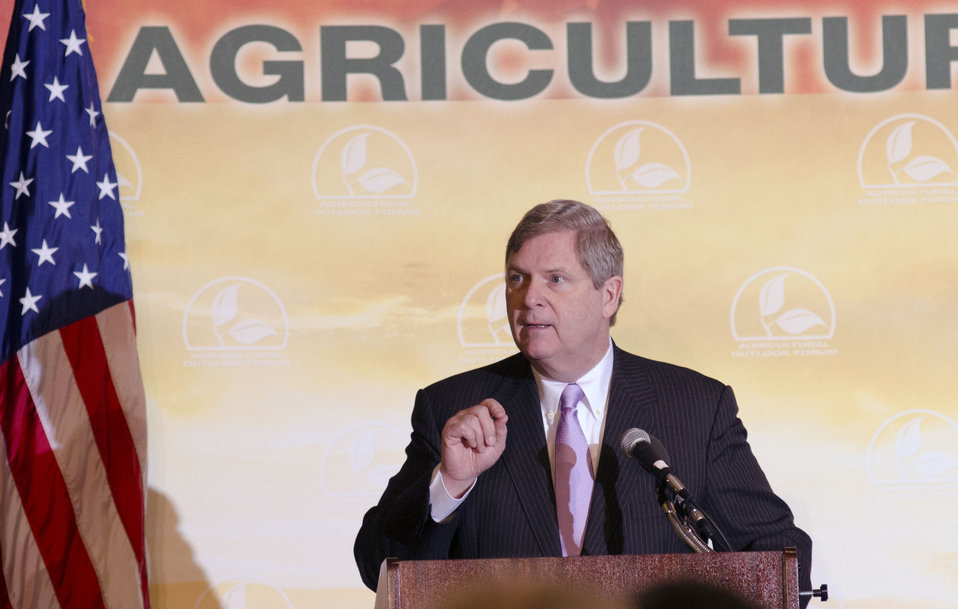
Agriculture Secretary Tom Vilsack presents the Keynote address at the Opening session of the 2013 Agriculture Outlook Forum, in Arlington, VA, on Thursday, February 21, 2013.